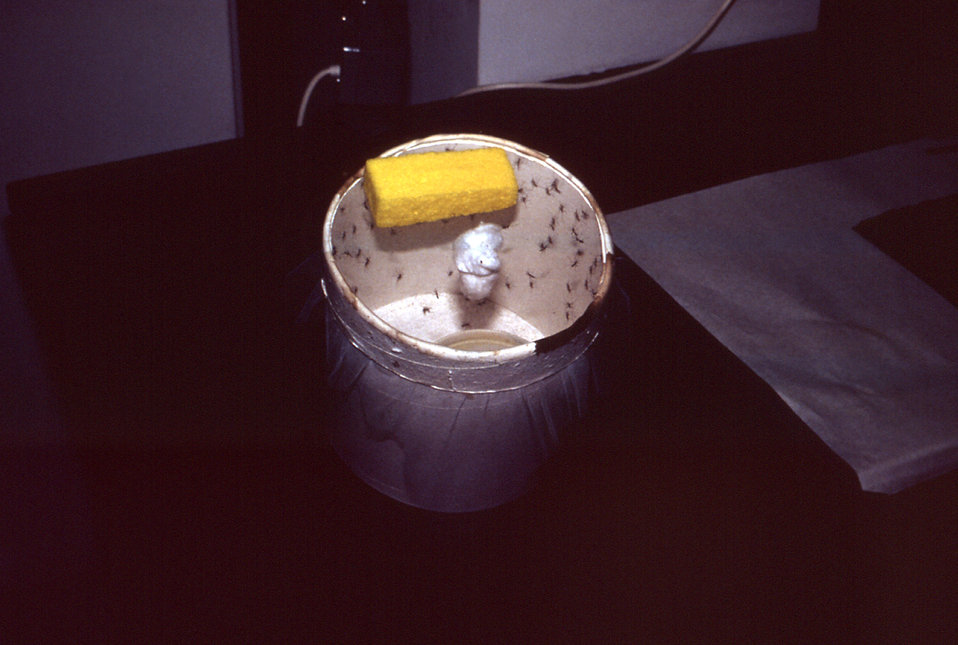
This 1981 photograph depicted a collection of adult mosquitoes inside a container after they were collected in the field, for purposes of conducting bioassay studies under laboratory conditions, which included a count and classification of these arthropods.